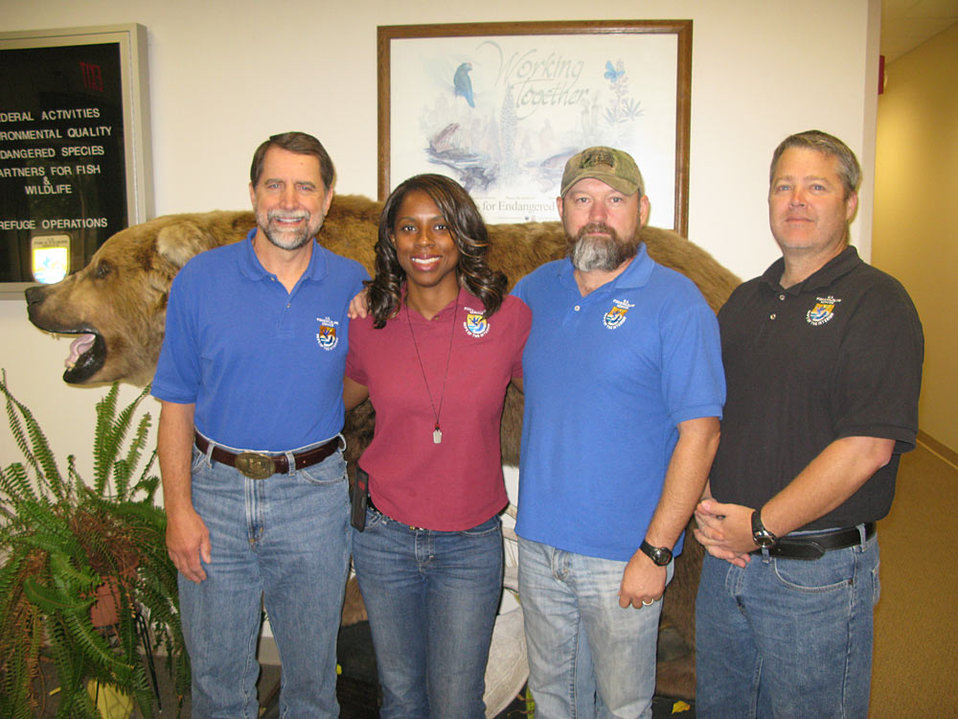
Tulsa Ecological Field Office

Several members of the Tulsa Ecological Field Office are veterans. From left: Jontie Aldrich and Rhonda Spinks served in the Army National Guard; Kevin Burgess in the Navy; and Chris Tanner in the Marines.